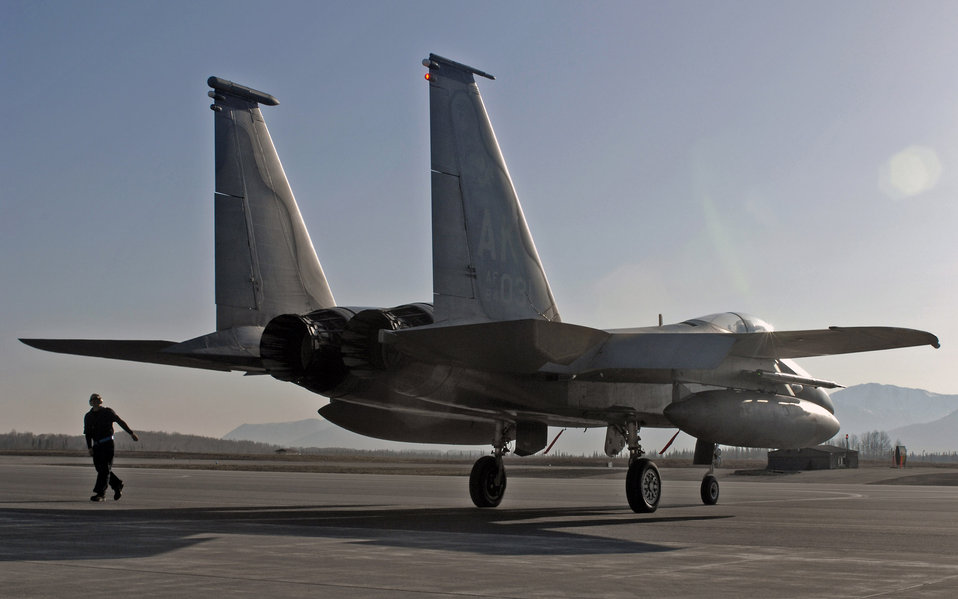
Red Flag-Alaska ends

An F-15 Eagle taxies out on the flightline in preparation for takeoff to participate during Red Flag-Alaska 2009 April 30 at Elmendorf Air Force Base, Alaska. This exercise enabled flying squadrons to enhance their fighting capabilities in simulated combat sorties in a realistic threat environment. The 10-day exercise ended May 1.